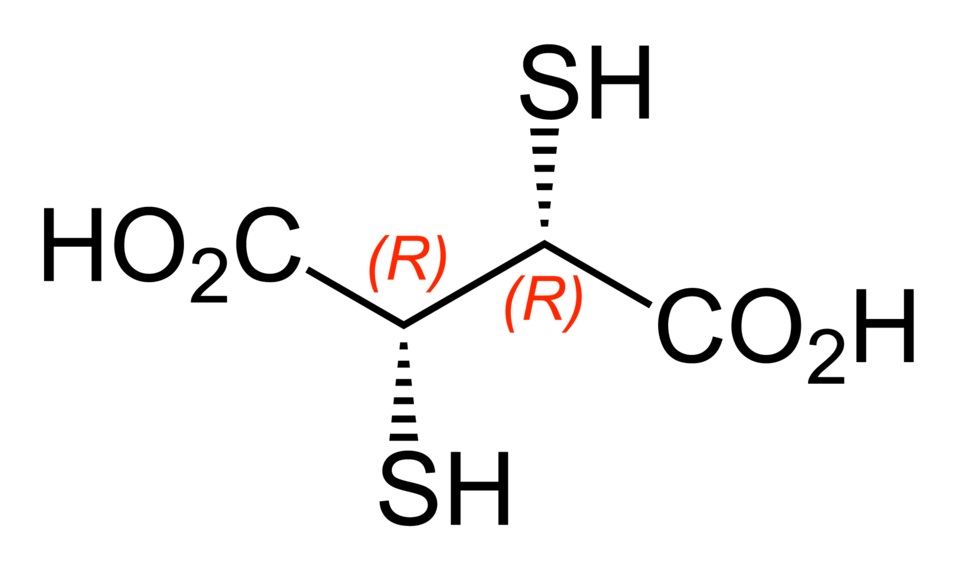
Skeletal formula of (2R,3R)-2,3-dimercaptosuccinic acid, C4H6O4S2. Structure drawn in ChemBioDraw Ultra 12.0.